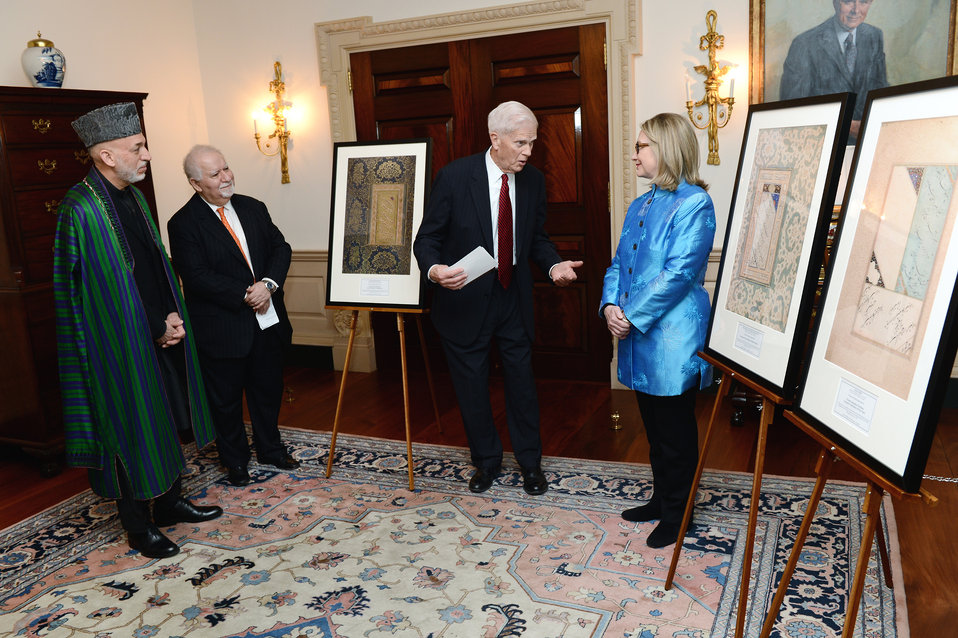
Secretary Clinton Participates in Library of Congress Presentation to the Government of Afghanistan

Dr. James Billington of the U.S. Library of Congress speaks with U.S. Secretary of State Hillary Rodham Clinton as Afghan President Hamid Karzai and Dr. Vartan Gregorian of the Carnegie Corporation of New York listen at the U.S. Department of State in Washington, D.C., January 13, 2012. Secretary Clinton presented President Karzai with a gift from the U.S. Library of Congress and the Carnegie Corporation of New York – a digital copy of the entire body of Afghanistan-related works at the library, as well as a framed copy of a rare manuscript from the collection.